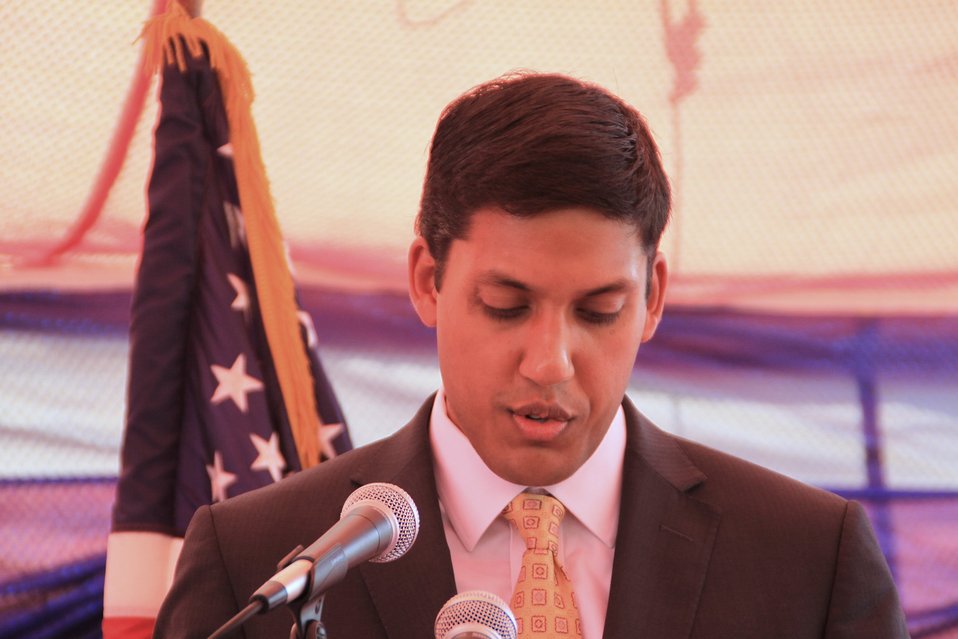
Badam Bagh Farm